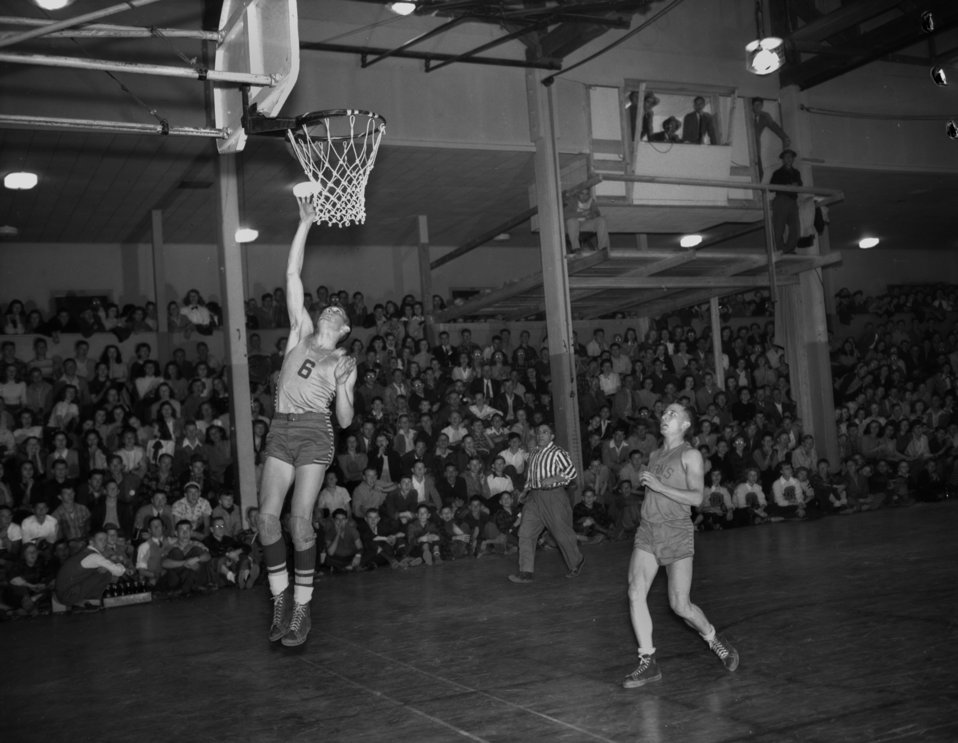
High School Basketball

004305b DOE photo by Ed Westcott
Oak Ridge Tennessee 2-6-1948